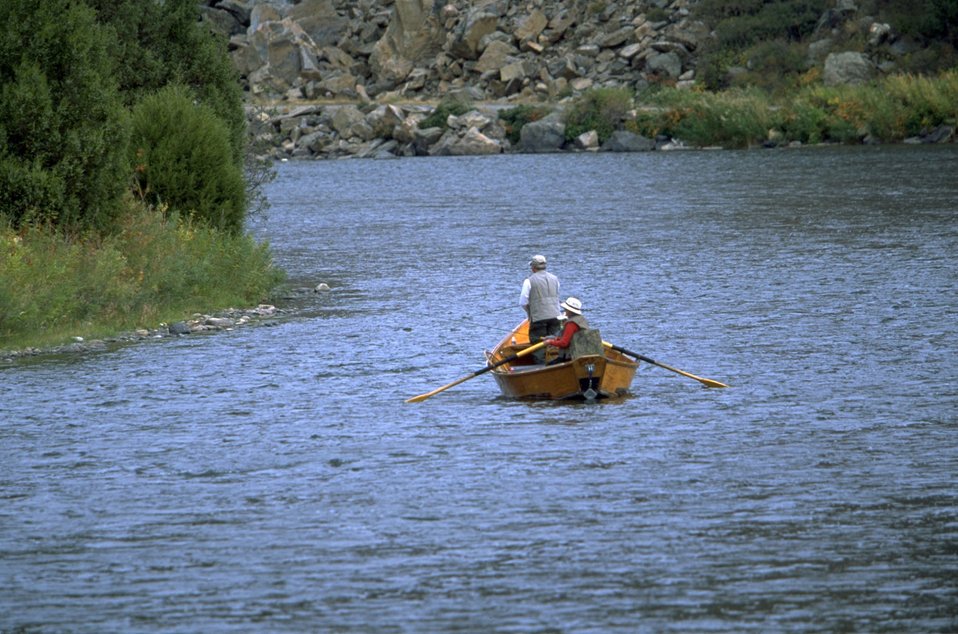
Float Fishing on the Madison River